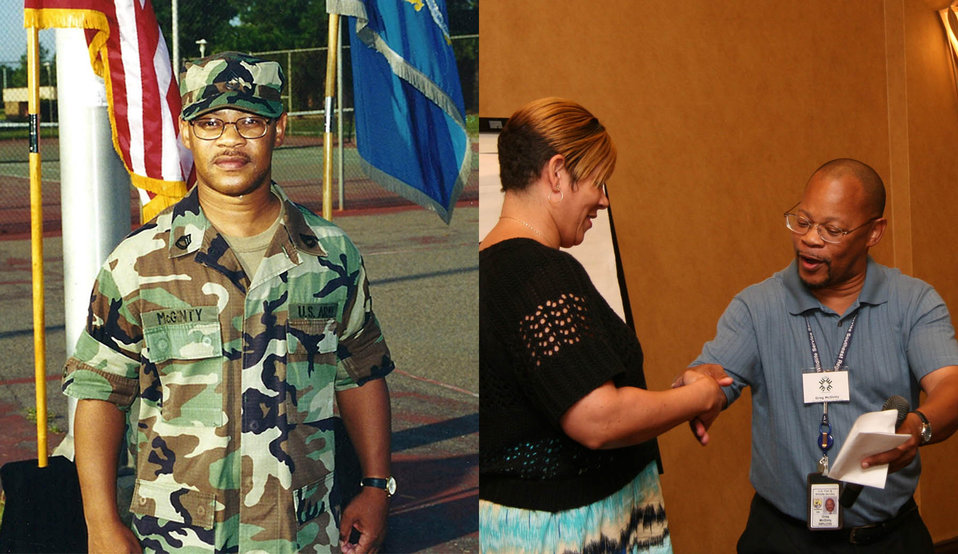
Greg McGinty

Gregory McGinty (right) Greg McGinty presnets a 9/11 remembrance coin to Sandra Craig for her exemplary efforts supporting the training..
.
Gregory McGinty entered the U.S. Army in August 1978. He served as a Military Intelligence Analyst for the U.S. Army Intelligence and Security Command (INSCOM). Greg served our great nation for 23 years. During his military career, he was assigned to units throughout the world and in the continental United States. His assignments include; Japan, Germany, Republic of South Korea, North Carolina, South Carolina, Washington, Maryland, and Georgia. He retired from the Army as a Sergeant First Class in December 2005. .
.
Greg joined the U.S. Fish and Wildlife Service family in June 2006. He currently serves as the Senior Equal Employment Opportunity (EEO) Specialist assigned to the Regional Office of Diversity and Civil Rights..
.
Greg’s professional awards and decorations include; the Legion of Merit, two Meritorious Service Medals, six Army Commendation Medals, four Army Achievement Medals, two National Defense Service Medal, Joint Service Achievement Medal, Korean Defense Service Medal, seven Good Conduct Medals, Joint Meritorious Unit Award, Air Force Outstanding Unit Award, Army Superior Unit Award, and Global War on Terrorism Medal.